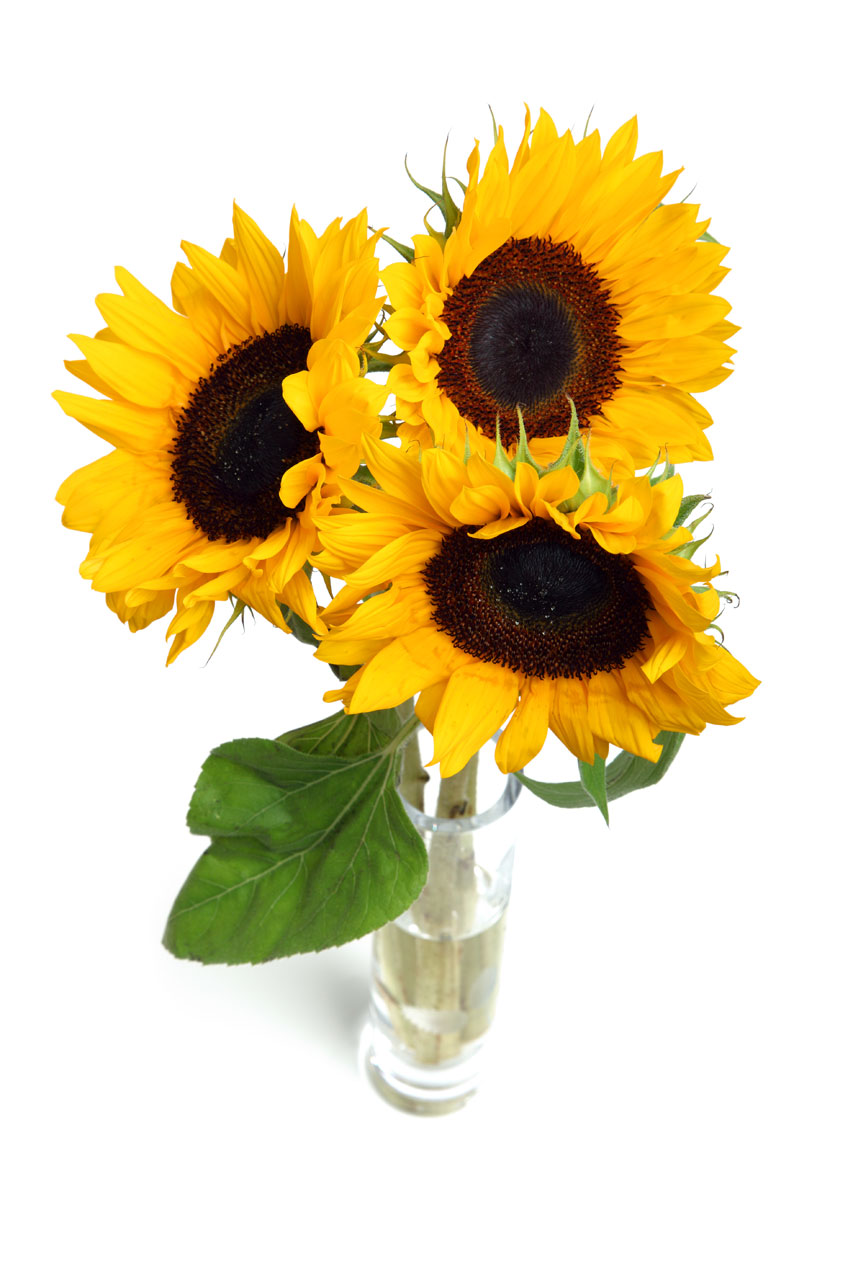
Sunflowers isolated

Sunflowers in vase isolated on white background.